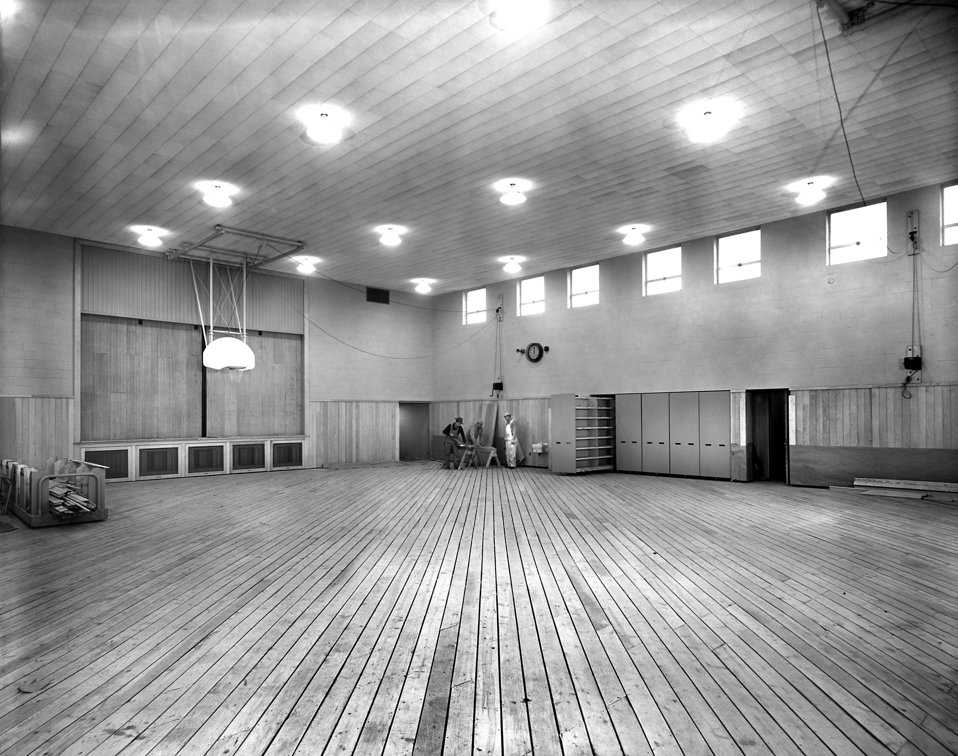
Elementary School Neighborhood 11 1949 Oak Ridge

5764-4 DOE photo Ed Westcott 11-25-1949 Oak Ridge Tennessee